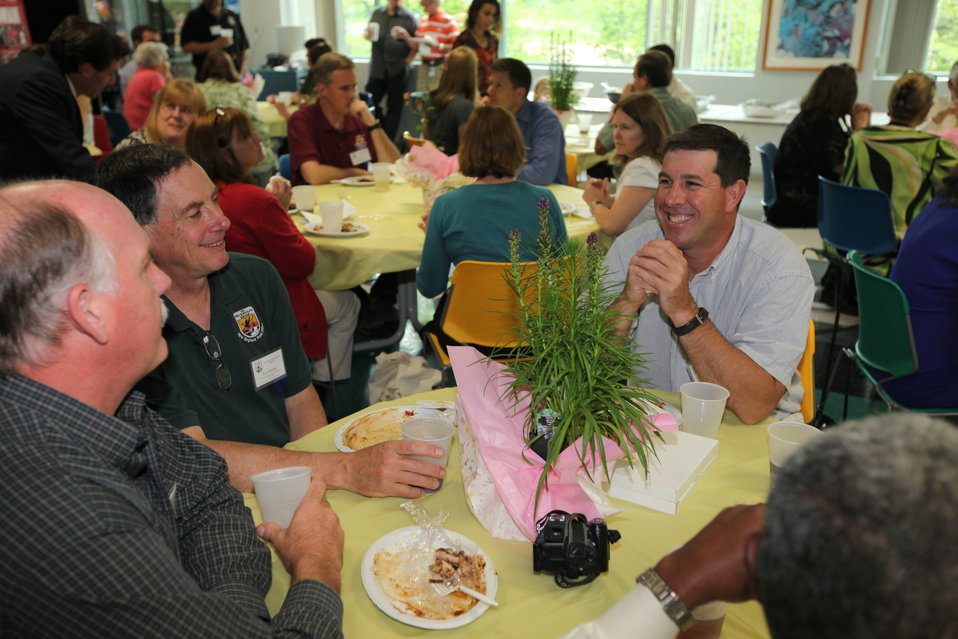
Northeast Region Employee Appreciation Awards

Luncheon